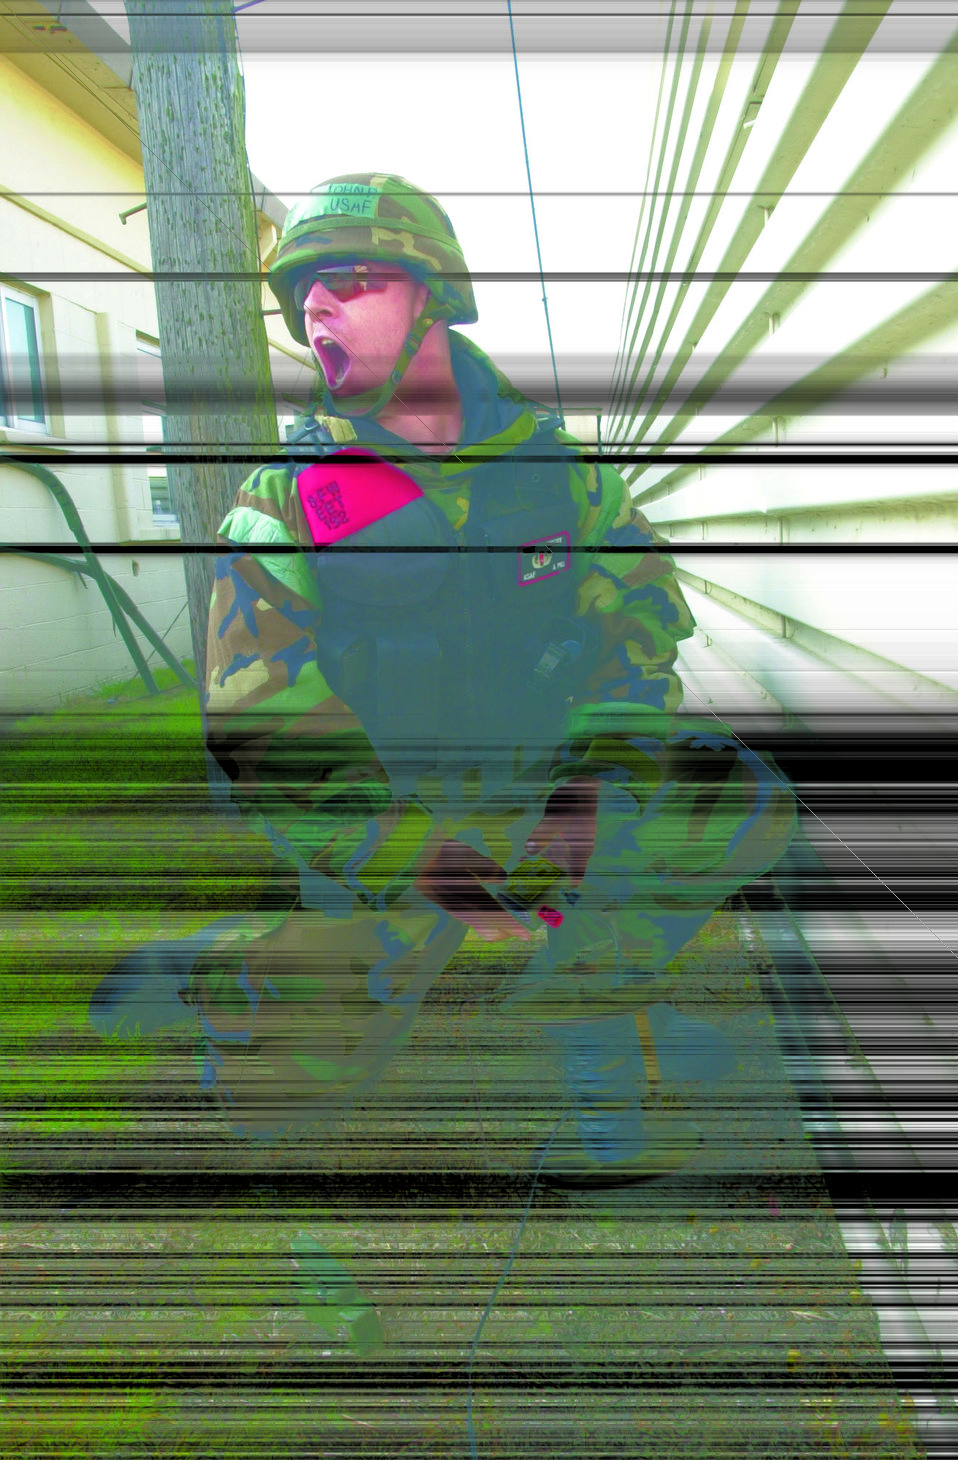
Kunsan Airmen destroy Korean War bazooka round

KUNSAN AIR BASE, South Korea -- Staff Sgt. John McCoy yells out a safety call Dec. 16 to warn people that they are about to detonate a bazooka round. He is assigned to the 8th Civil Engineer Squadron explosive ordnance disposal flight.